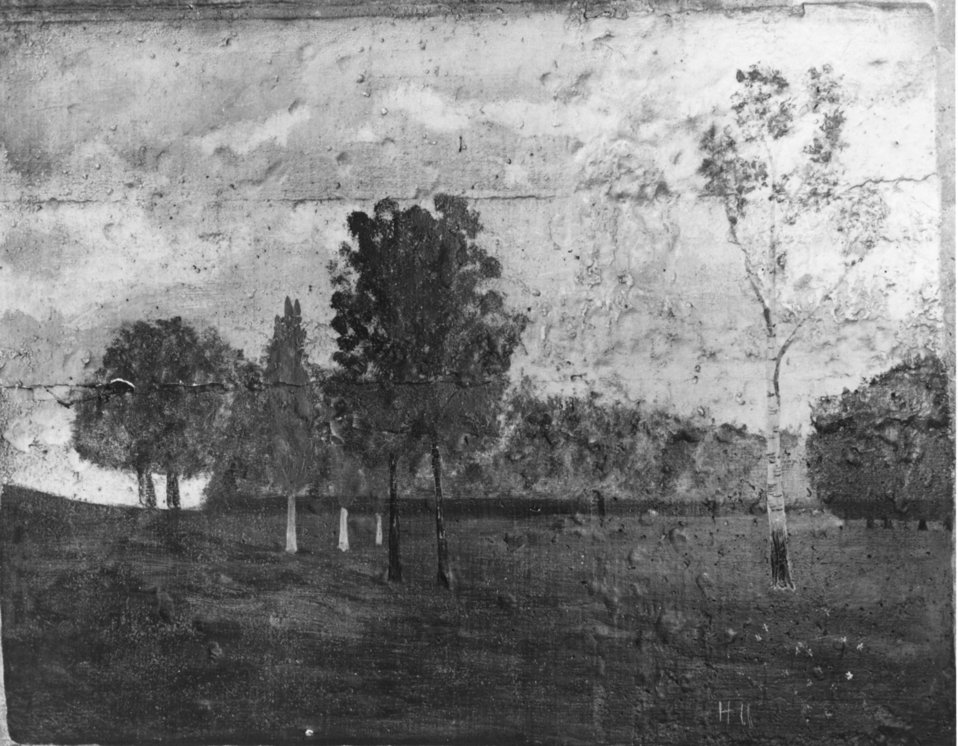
Early settlers at Oak Ridge